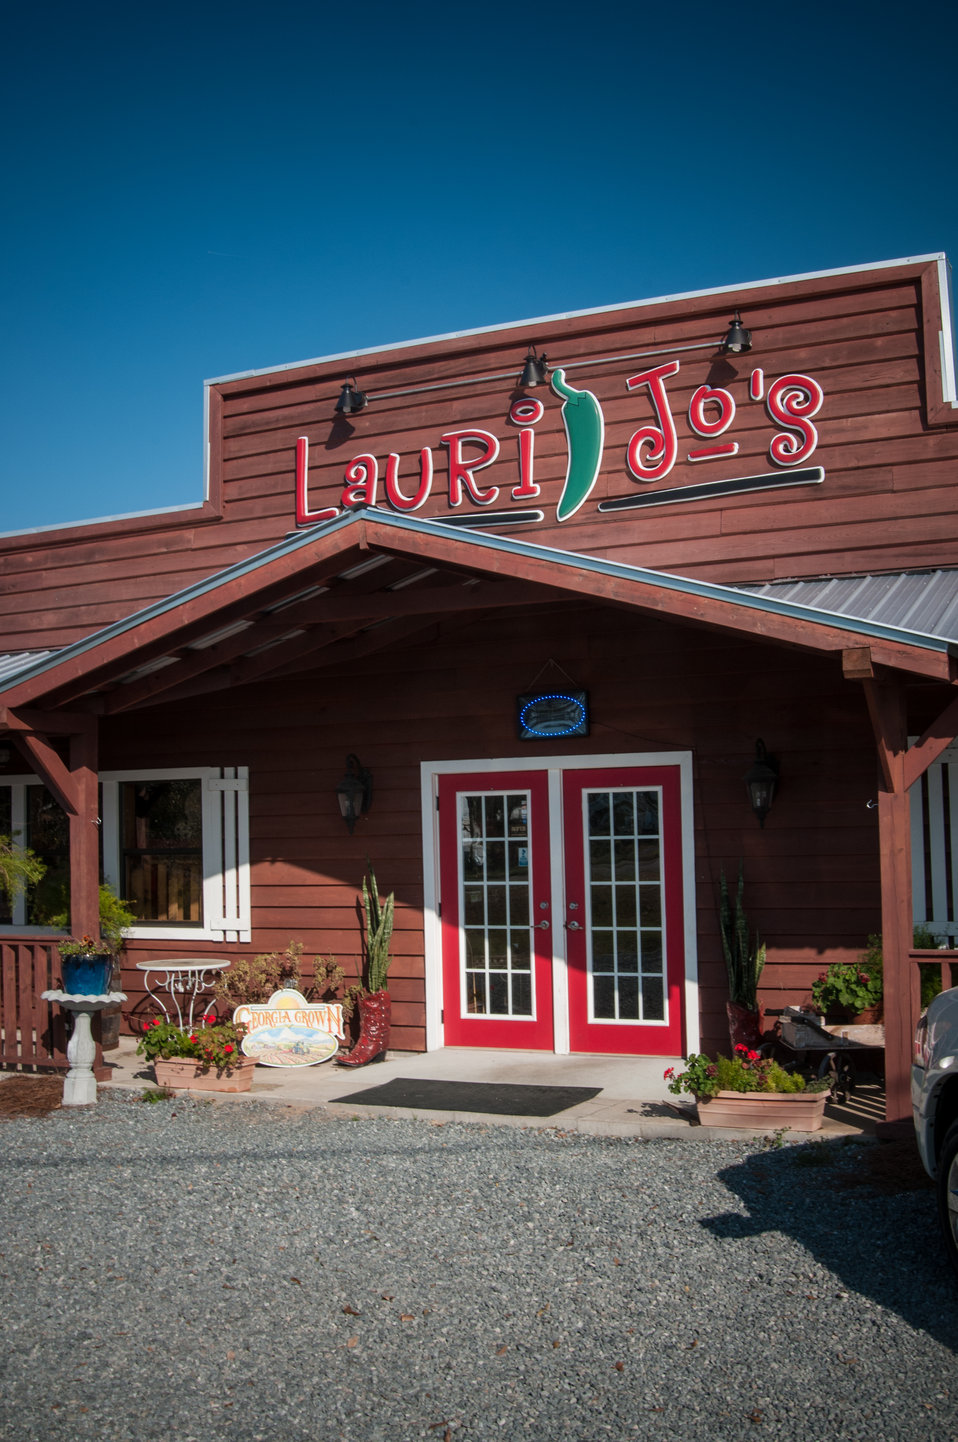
The sun shines on Laurie Jo’s Southern Style Canning business in Norman Park, Colquitt County, GA on Mar. 7, 2013. The business has increased its production to 12 items that now includes pickled green tomatoes, pickled okra, pickled asparagus pickled green beans, red and green pepper jellies, pineapple pepper jelly salsa and pepper sauce. Consumers may now purchase Lauri Jo’s Southern Style Canning Line in Whole Foods, Earth Fare and Kroger stores across 20 states. Lauri Jo Bennett applied for a U.S. Department of Agriculture (USDA) Rural Development (RD) Rural Business Enterprise Grant (RBEG) to help market her products. The grant from USDA has enable Lauri Jo to employ 26 people. The USDA Strike Force Initiative has designated Colquitt County, GA as a Strike Force county selected to receive assistance to relieve persistent poverty in historically high-poverty counties.